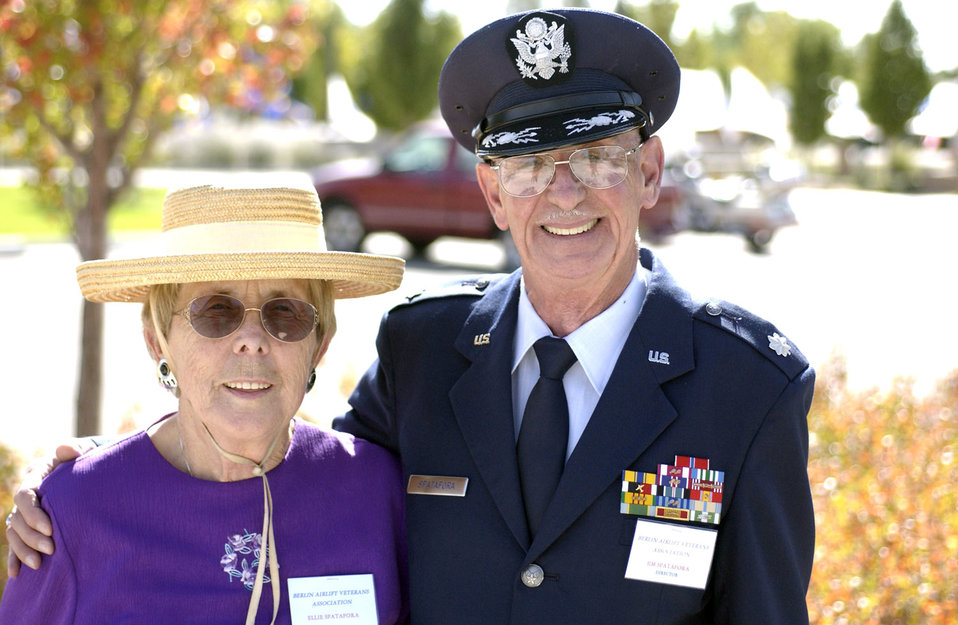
Seeds of 56-year marriage planted during Berlin Airlift

Retired Lt. Col. James and Ellie Spatafora attended the Berlin Airlift plaque dedication at Veterans Memorial Park in Albuquerque, N.M., Oct. 4. The Spatafores will celebrate their 57th anniversary Dec. 24. They met in Germany during the Berlin Airlift.